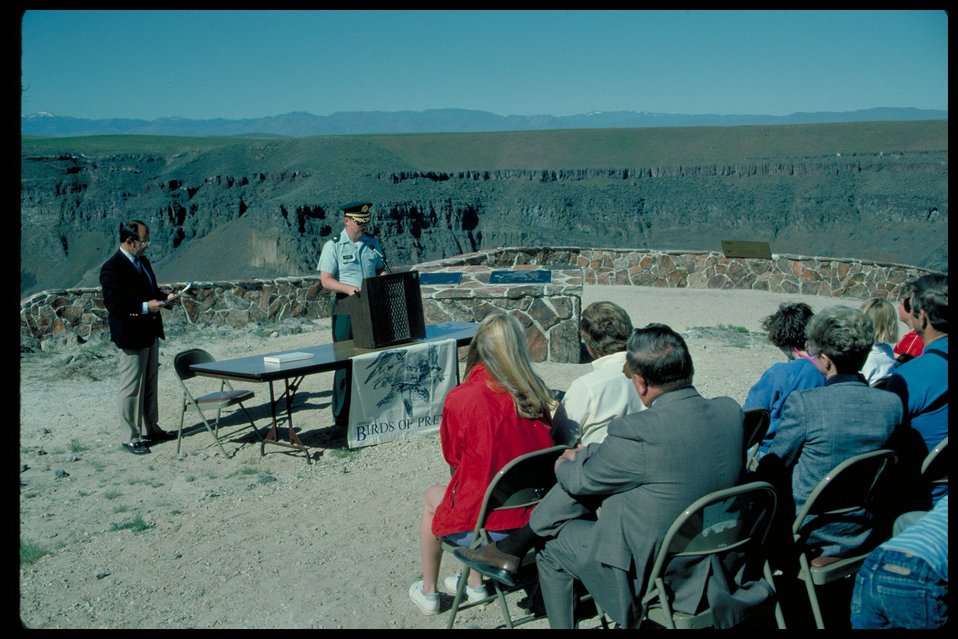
Education Birds of Prey National Conservation Area BOP Owyhee Field Office LSRD Lower Snake River District